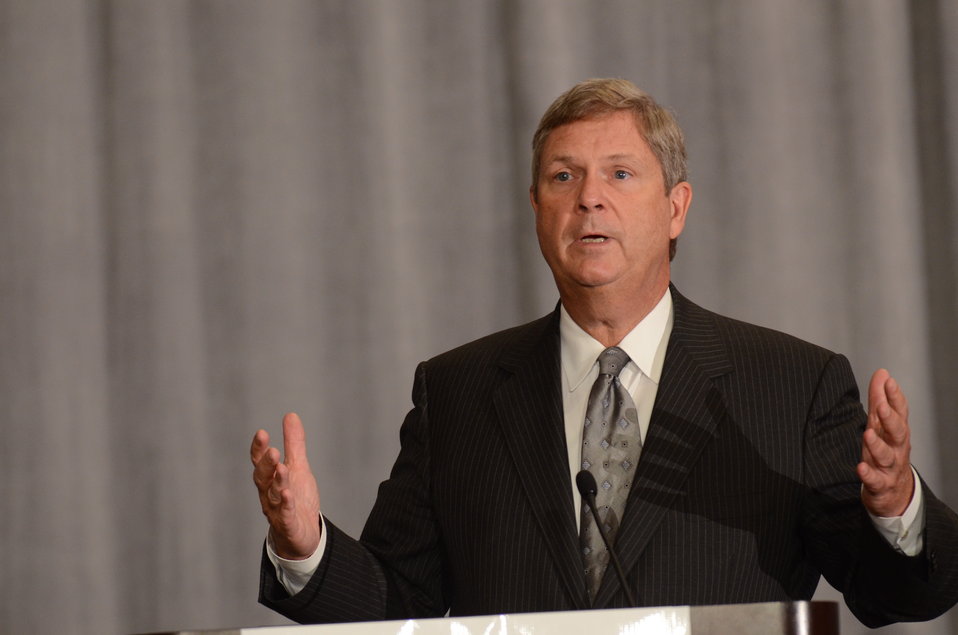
Agriculture Secretary Tom Vilsack speaks at the International Association for Food Protection (IAPP) 100th annual meeting in Milwaukee, WI, on Wednesday, August 3, 2011. IAPP is committed to providing members worldwide with a forum to exchange information on protecting the global food supply.